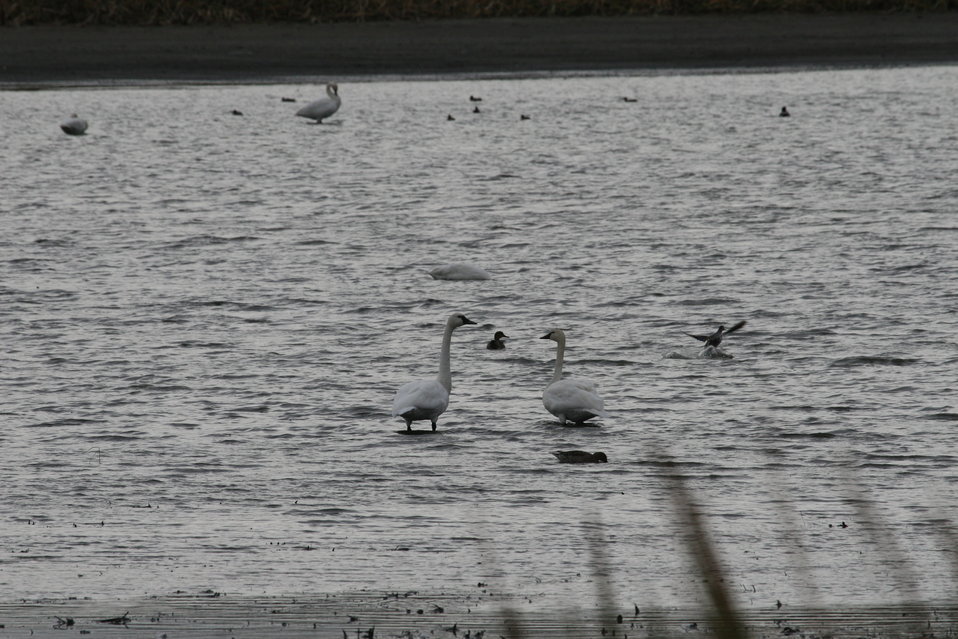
Fall on the Refuge - Tundra Swans

Tundra Swans pair monogamously until one partner dies. Should one partner die long before the other, the surviving bird often will not mate again for some years, or even for its entire life.